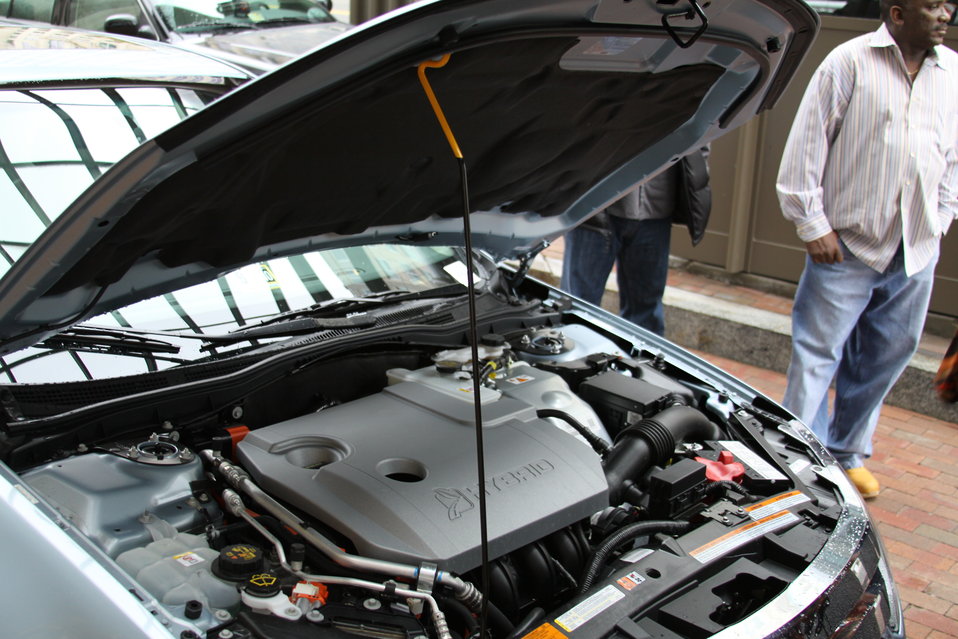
FCC Official Vehicle Tour